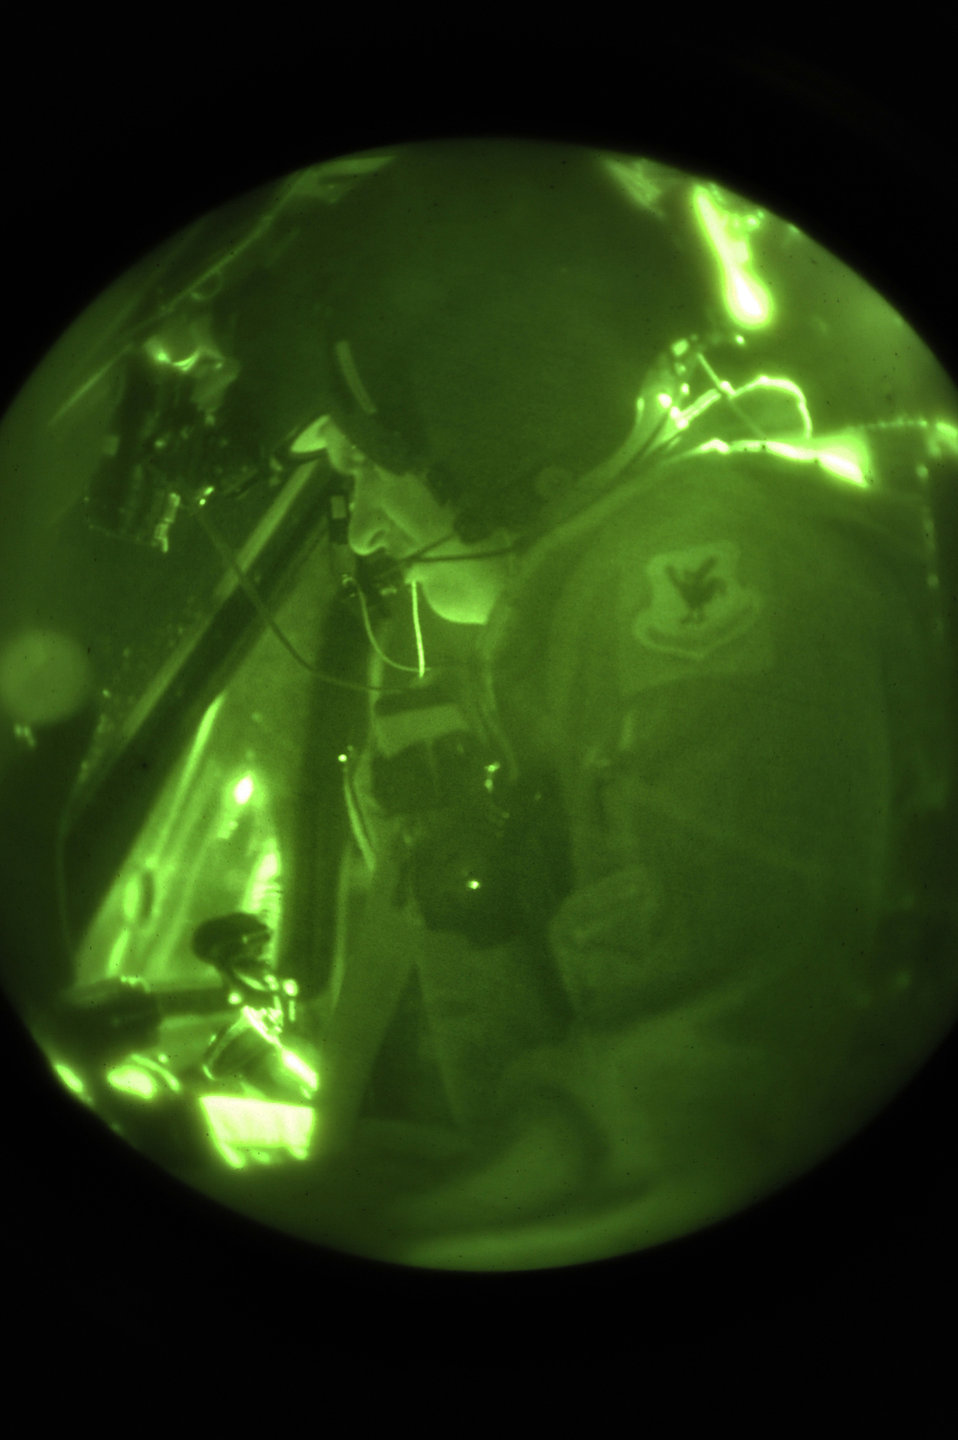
33rd RQS head to Mainland for search and rescue

Capt. Thomas Stengl, an HH-60 Pavehawk pilot with the 33rd Rescue Squadron completes pre-flight checks before heading to mainland Japan here at Kadena Air Base, March 13. The 33rd RQS will be assisting in search and rescue following the earthquake and tsunami that struck mainland Japan, Friday afternoon.